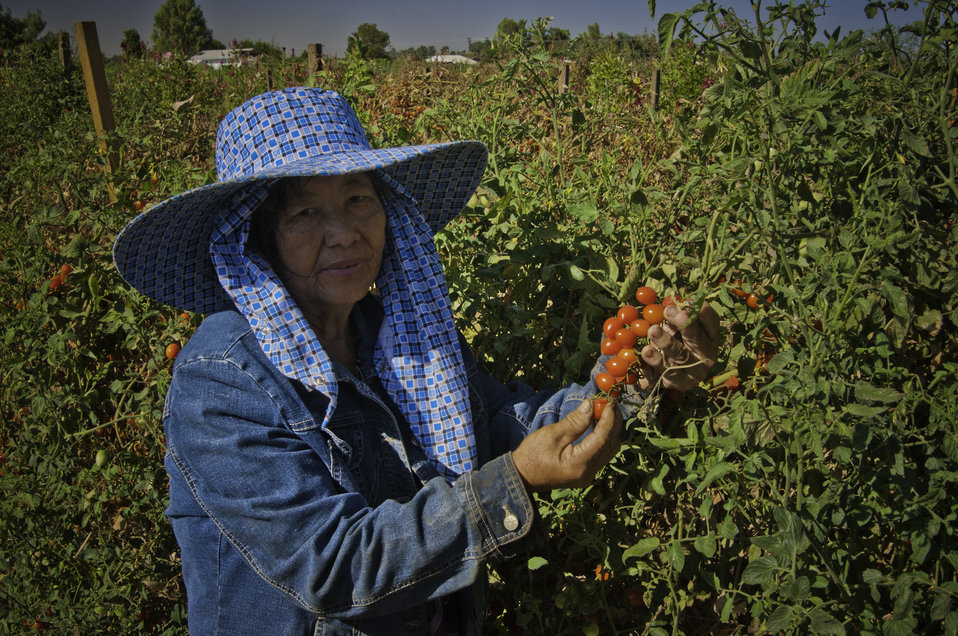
May Young Vu a Hmong farmer harvesting cherry tomatoes on her farm May's Flower's in Sanger, California May Young Vu a Moung farmer taking opo squash harvested in the morning on her farm May's Flower's in Sanger, California to be packed for the farmers market in the afternoon on Thursday, August 29, 2013.